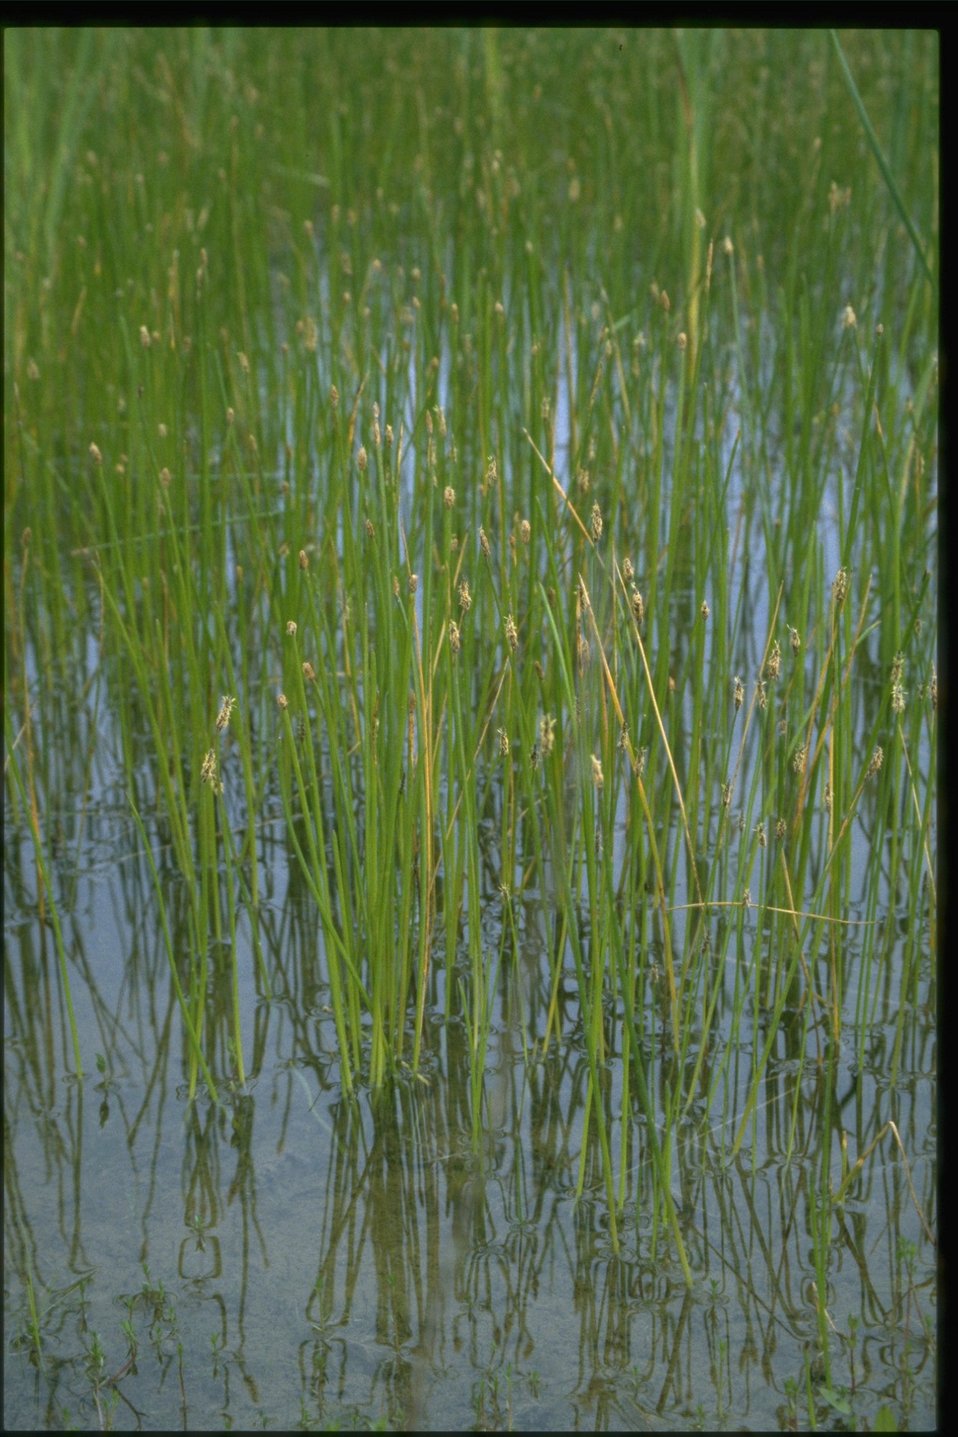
Far shot of Typha latifolia/ Eleochon's.